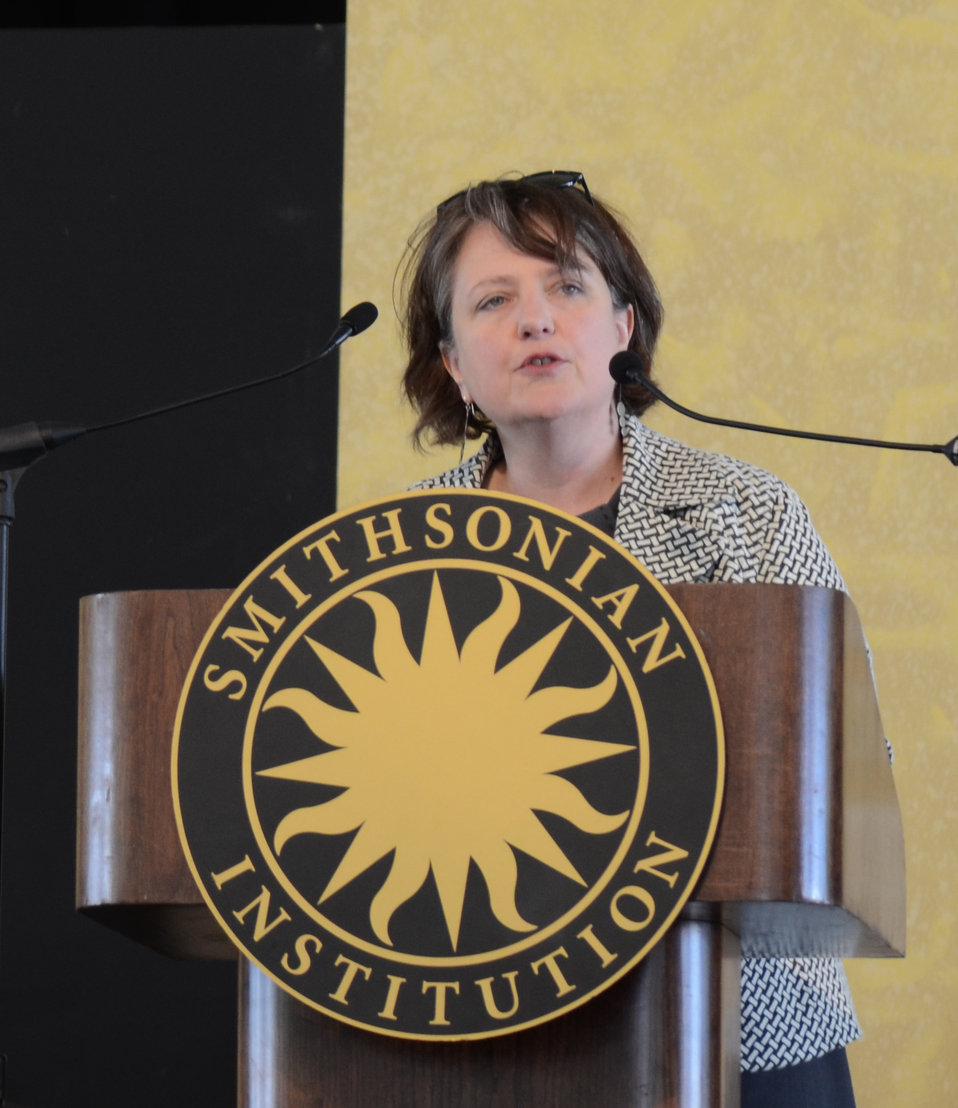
Agriculture Deputy Secretary Kathleen Merrigan speaks at opening ceremony of the 2012 Smithsonian Folklife Festival on the National Mall in Washington, D.C. on June 27, 2012. This year’s festival features three themes; “Creativity and Crisis” celebrates the 25th anniversary of the AIDS Memorial Quilt, “Citified,” explores the rich culture and community of neighborhoods east of the Anacostia, and the third “Campus and Community” celebrates 150 years of USDA and the Land-Grant university system.